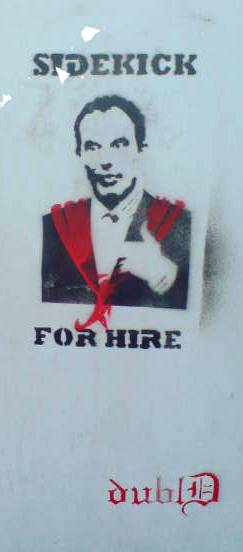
'Sidekick for hire' graffiti